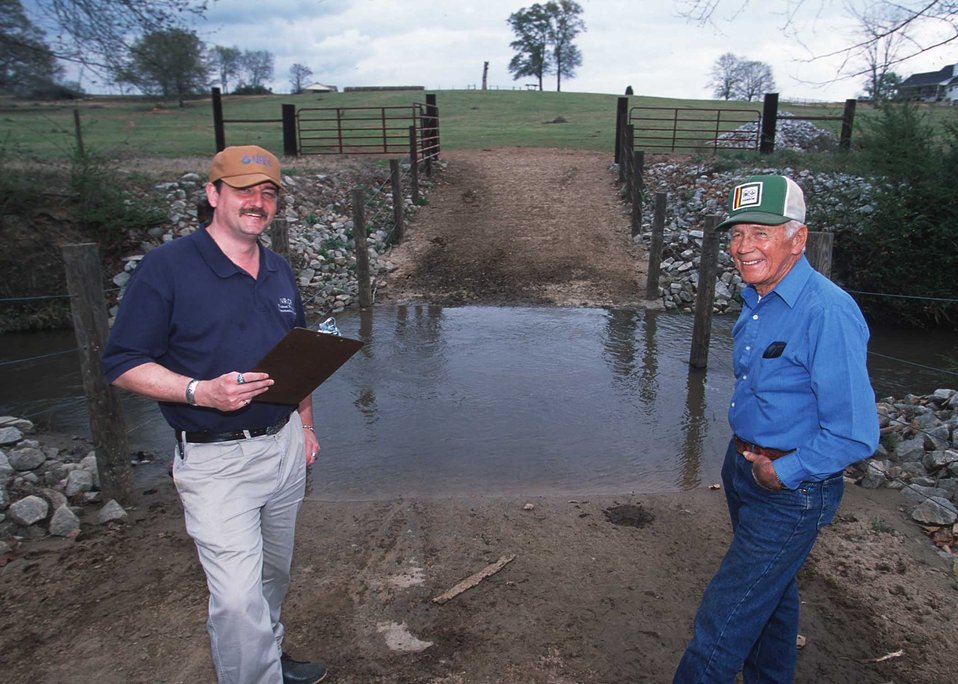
NRCS representative Larry Coburn inspects a concrete water crossing for livestock. Buffers and fencing for livestock exclusion are also part of the NRCS practices installed. Georgia.